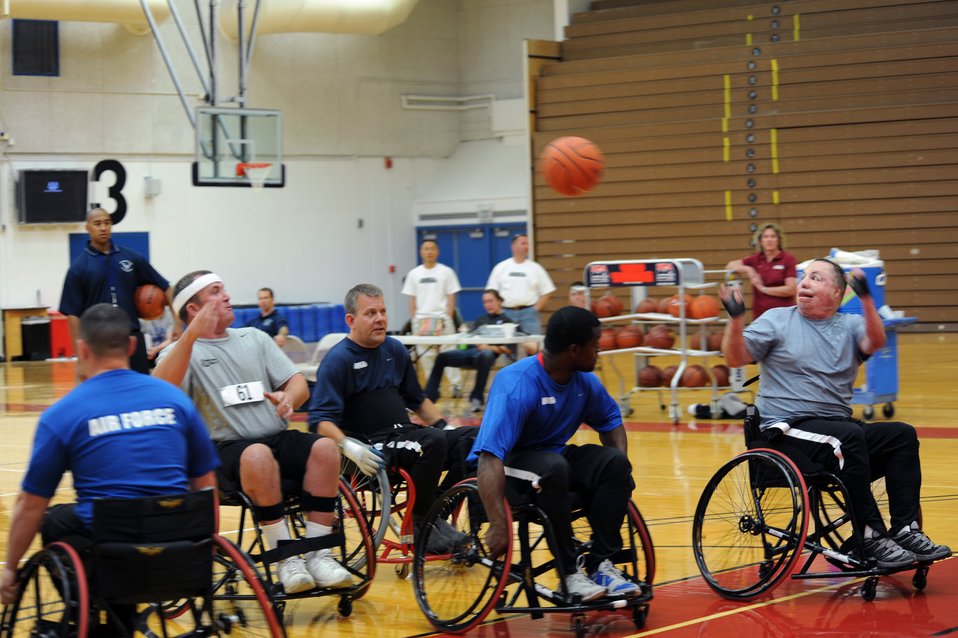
Warrior Games

Staff Sgt. Richard Pollock II (second from the left) passes the basketball to Tech. Sgt. Israel Del Toro (right) during practice May 10, 2010, at the Olympic Training Center in Colorado Springs, Colo. Sergeants Pollock and Del Toro are members of the Air Force wheelchair basketball team. Teams from the Air Force, Army, Navy, Marines and Coast Guard are participating in the inaugural Warrior Games which begin May 10 and finish May 14.